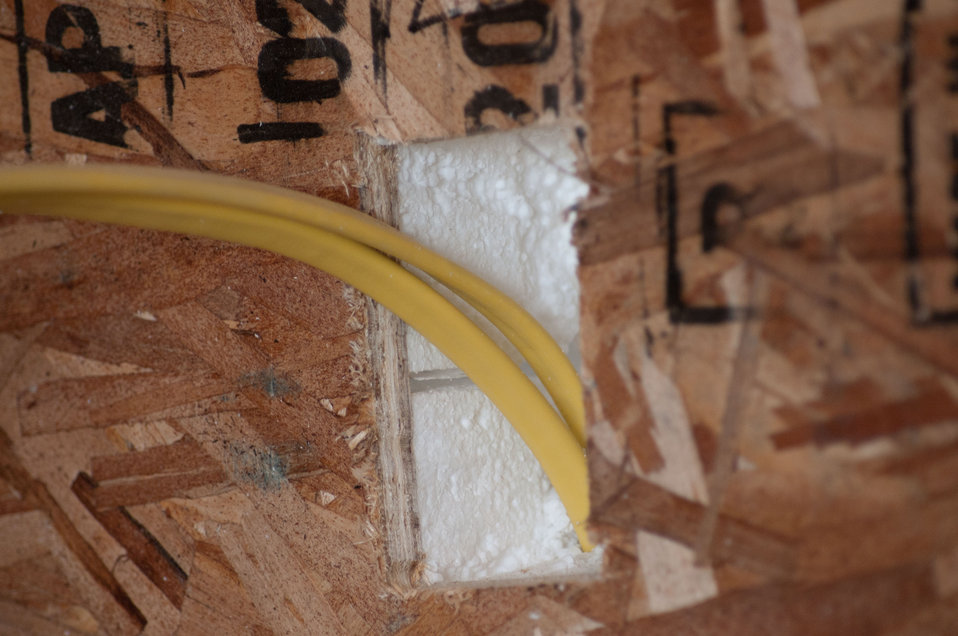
Extra thick foam filled floors and exterior walls add to the climate sealing and energy efficiency of a new type of manufactured home from Stardust Industries on Wednesday, July 13, 2011 in Monticello, KY. They are helping retool and redirect Kentucky’s houseboat manufacturing industry – which has been decimated because of the struggling economy – by using its facilities and manpower to create low-cost housing that is energy efficient. Rural Development obligated $499,000 in Rural Business Enterprise Grant funds to support this unique endeavor. Up until a few years ago, there were several successful houseboat manufacturers in the four-county area surrounding the city of Somerset. Most have now ceased operation or drastically reduced output, which has led to dramatic, long-term job loss. These new energy efficient homes will be constructed in redesigned, refitted houseboat factories using local workers that have been retrained.